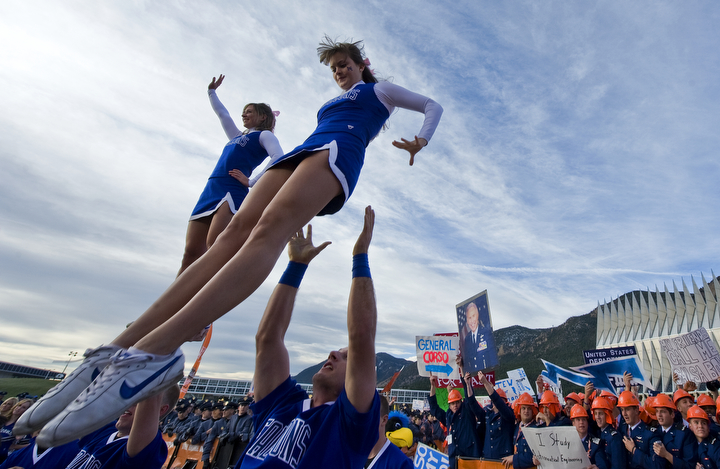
ESPN films 'College GameDay' from Academy

U.S. Air Force Academy cheerleaders perform at the Terrazzo during ESPN's